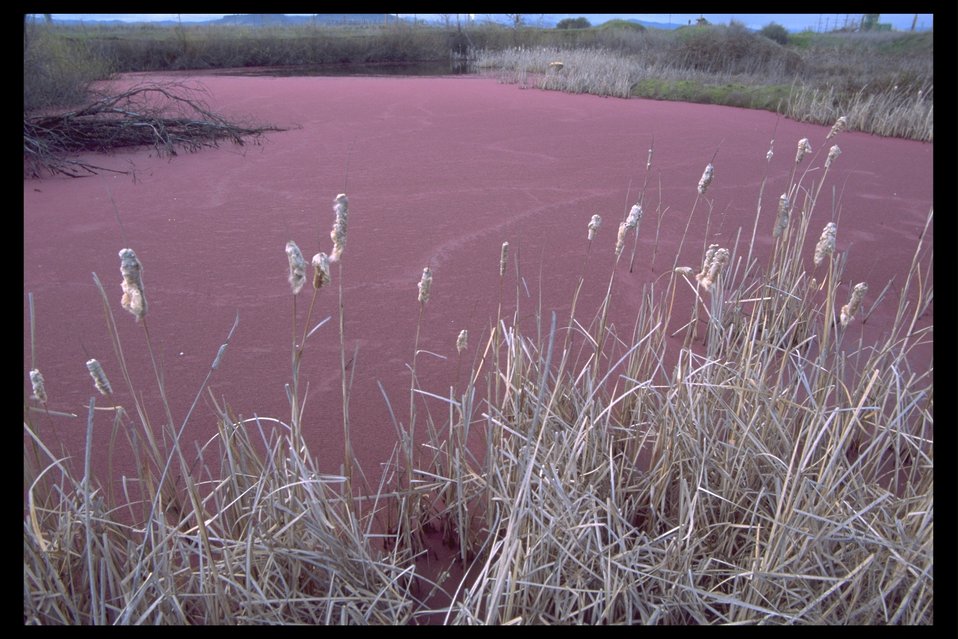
Algae bloom on pond at the Denman Wildlife Area near White City, Oregon.